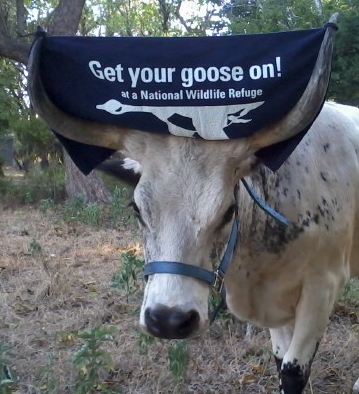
Get Your Goose On!

Wichita Mountains National Wildlife Refuge in Oklahoma.